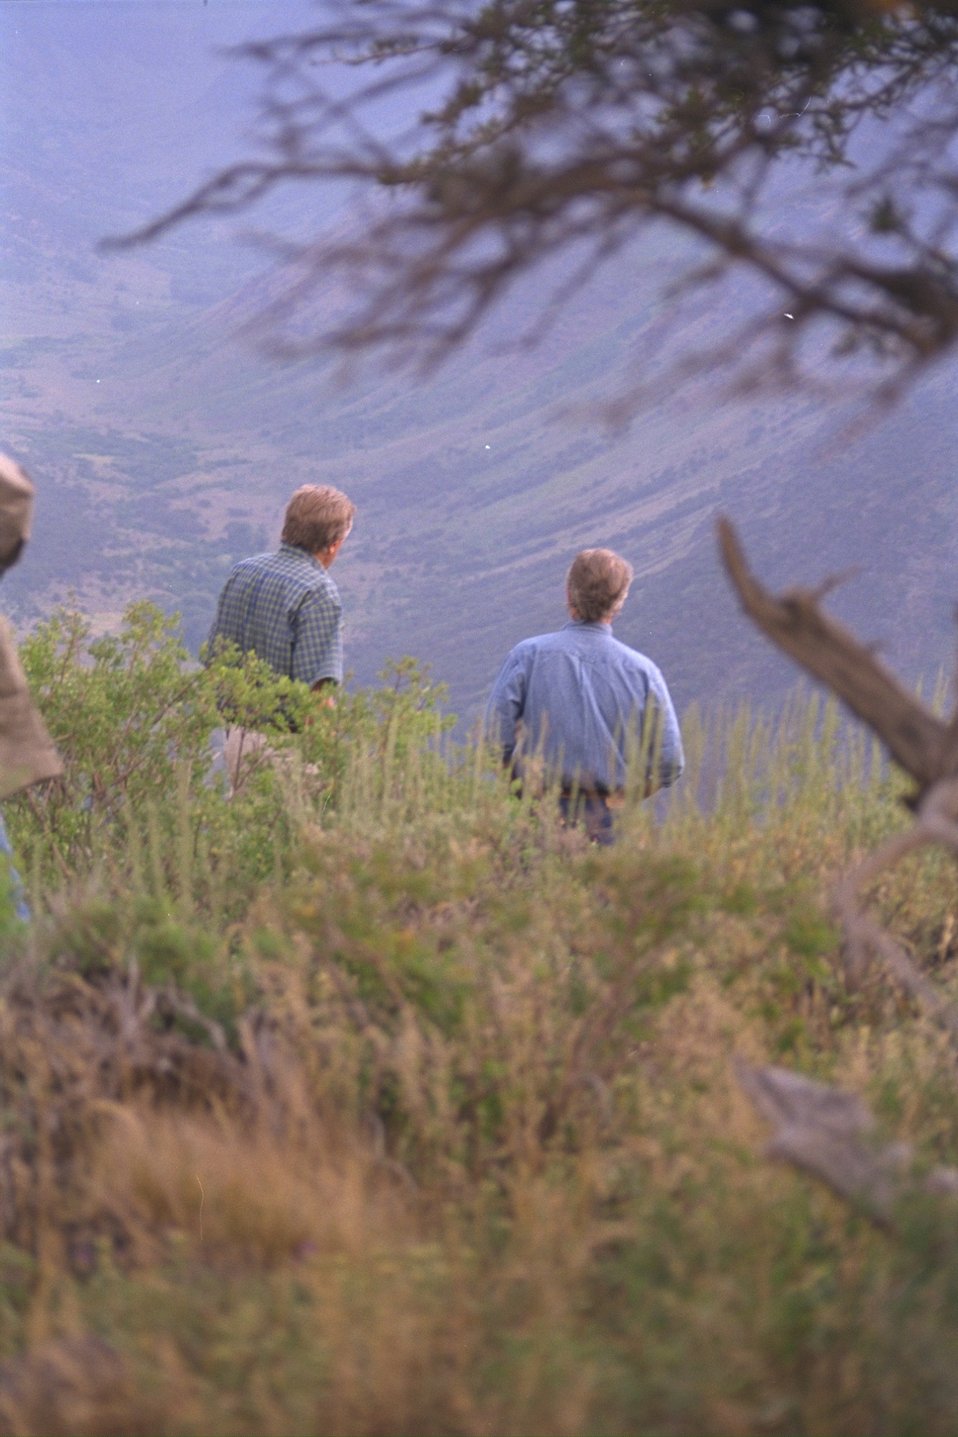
Secretary Babbitt (left) and Governor Kitzhaber (right) at Big Indian Gorge on the Steens.